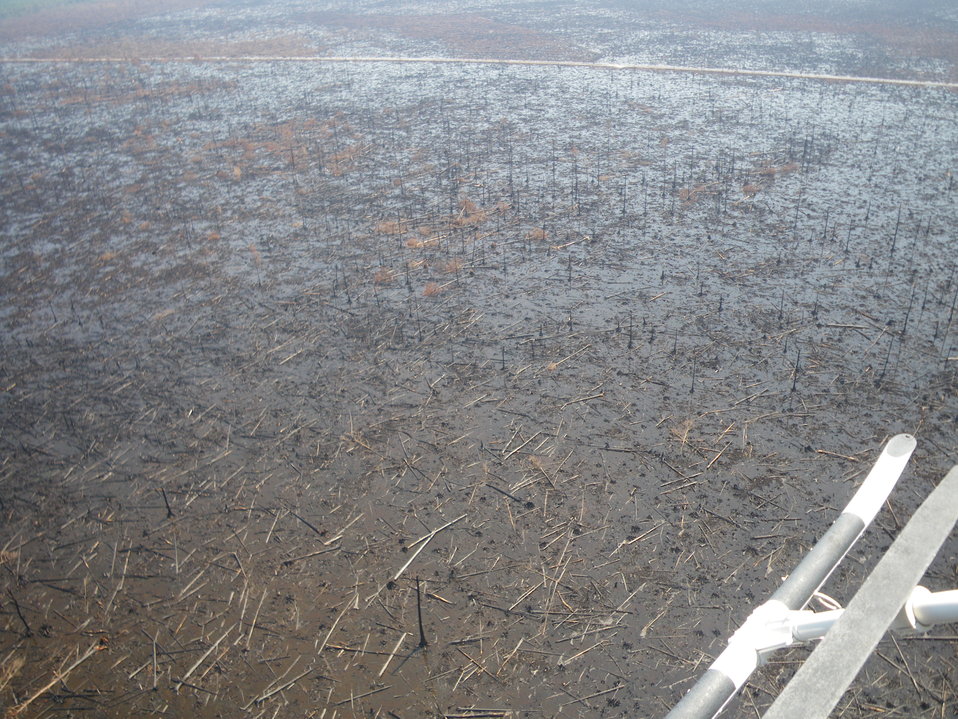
Lateral West Fire after Irene

Suffolk, VA, August 2011: A helicopter flight over the Lateral West Fire burning on Great Dismal Swamp National Wildlife Refuge after Hurricane Irene passed shows much of the fire area flooded from 10-15 inches of rain. Most areas with standing water were those that burned hot in the 2008 South One Fire.